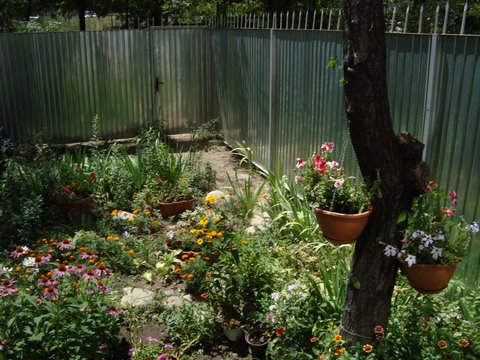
Sunlight Hits the Garden Cultivated By TIP Shelter Residents

The sunlight hits the garden cultivated by Trafficking-in-Persons (TIP) shelter residents in Almaty, Kazakhstan, on July 16, 2010.